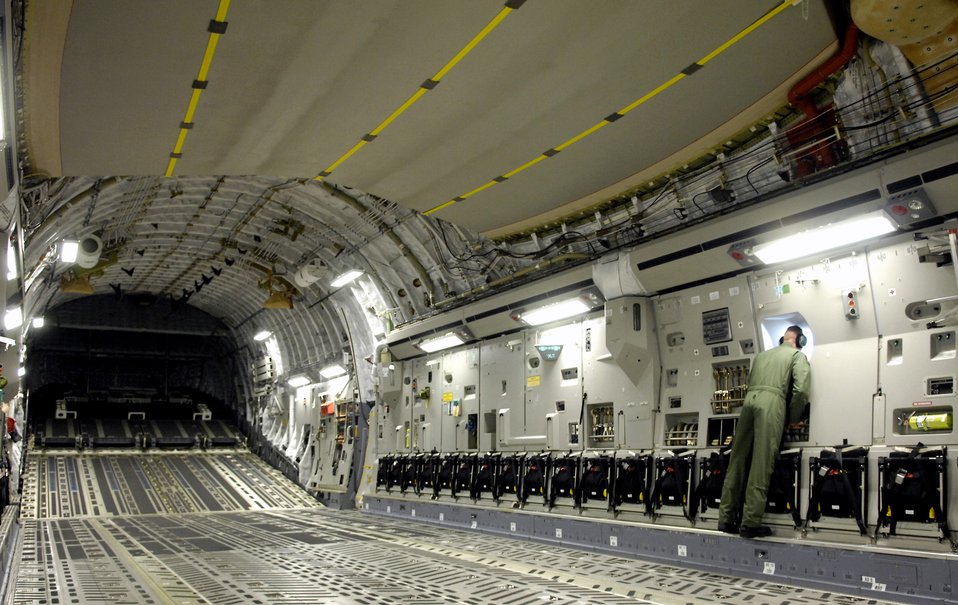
Hickam crew prepares for AMC Rodeo

Tech. Sgt. Ansen Lucas conducts an inspection of a C-17 Globemaster III after taking off June 22 on a refueling training mission from Hickam Air Force Base, Hawaii. A KC-135 Stratotanker from the 909th Air Refueling Squadron from Kadena Air Base, Japan, is at Hickam AFB practicing with the C-17 crew from the 535th Airlift Squadron for the 2007 Air Mobility Command Rodeo. Sergeant Lucas is a loadmaster with the 535th Airlift Squadron.